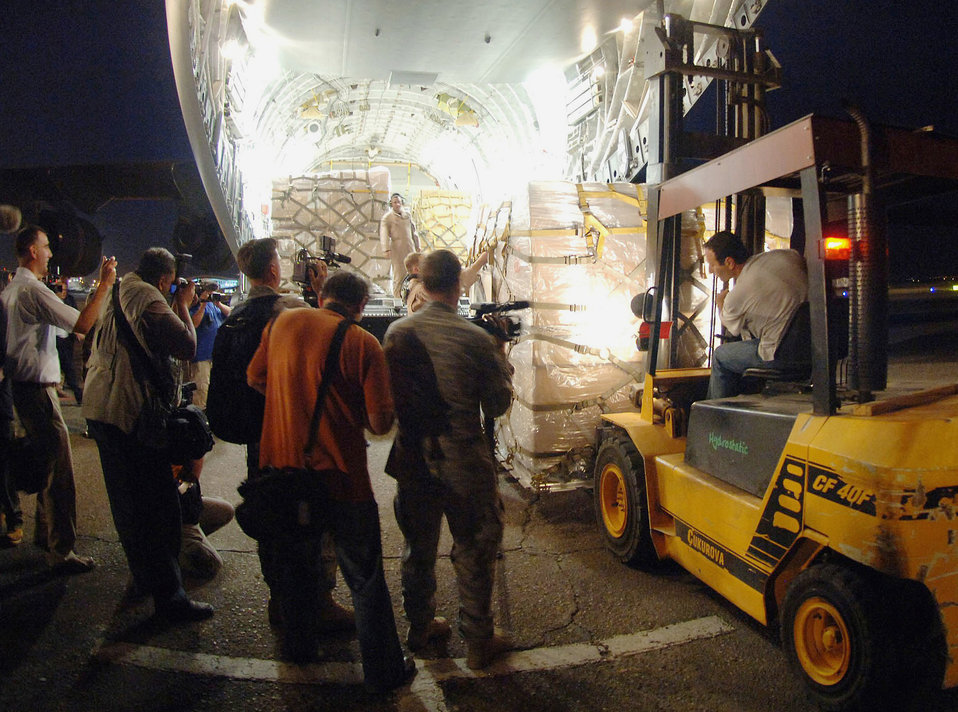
Ramstein members deliver aid to Georgia

International press photograph the first of 16 pallets containing $1 million in U.S.-donated medical supplies, blankets, sleeping bags and bed sheets for the people of the Republic of Georgia on a C-17 Globemaster III Aug. 13 at Sembach Air Base, Germany. The delivery was a joint service effort between Airmen representing both U.S. Air Forces in Europe and Air Mobility Command, as well as U.S. Army Europe Soldiers.